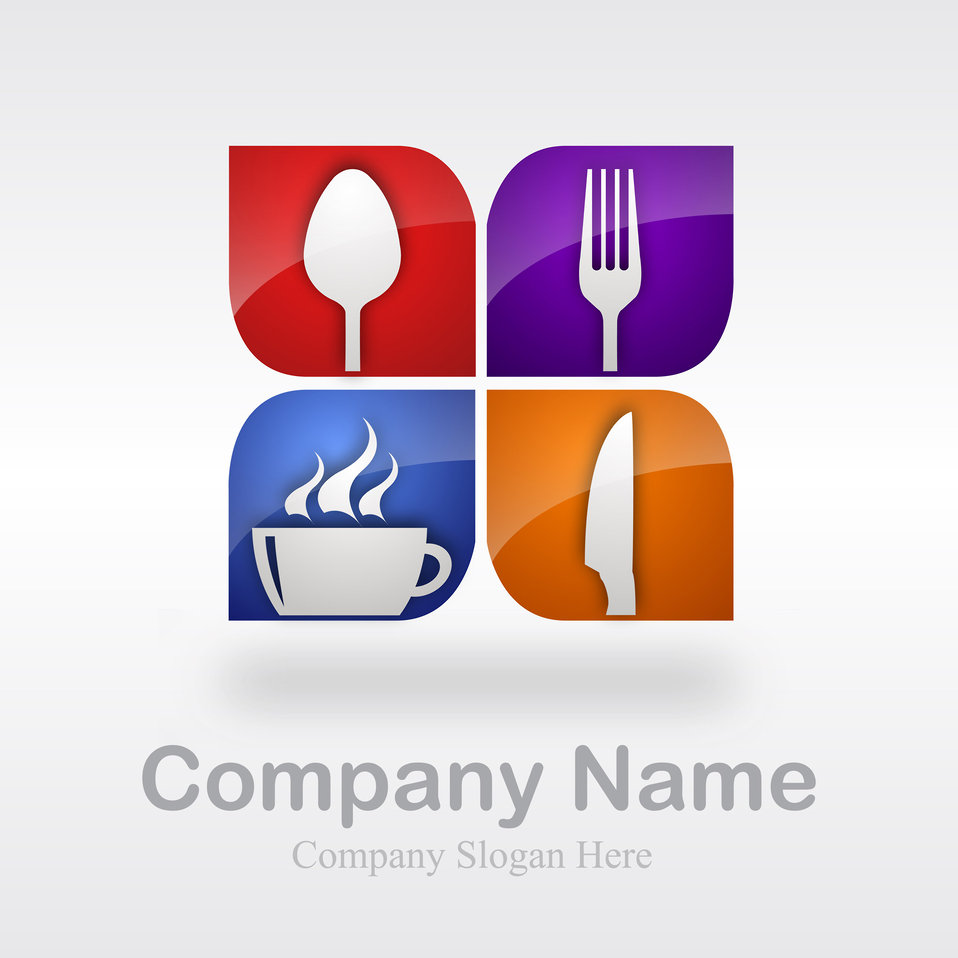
Restaurant logo

Great new logo for a restaurant.